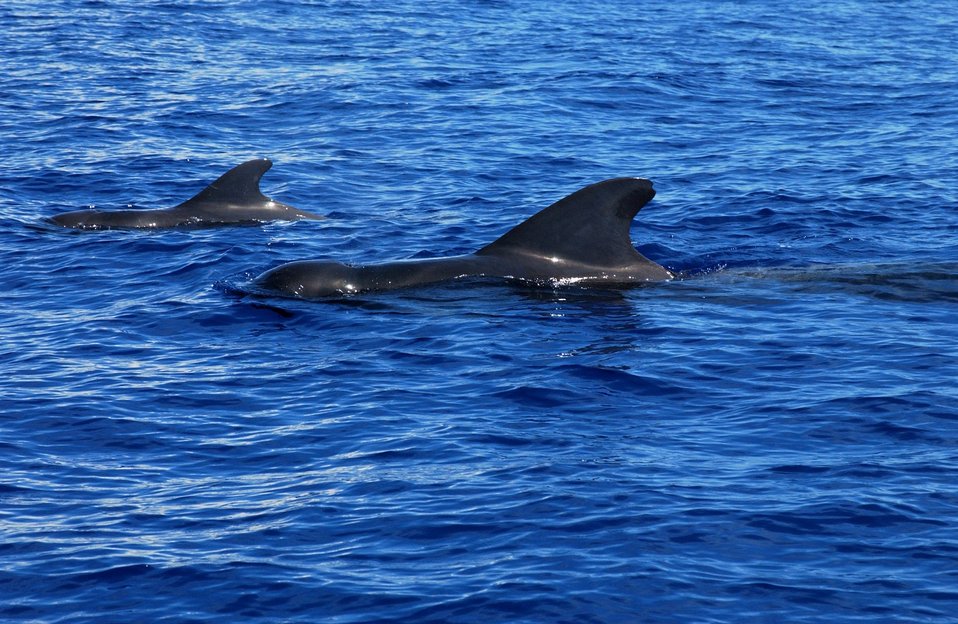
Pilot whales